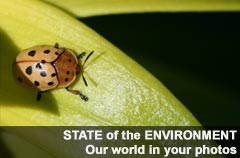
Spread the word!

If you see a great photo that you think should be in State of the Environment, copy this code and paste it into that photo's comment box:

Great photo! Consider adding it to: Official EPA and NARA Group Thank you for sharing your photos!